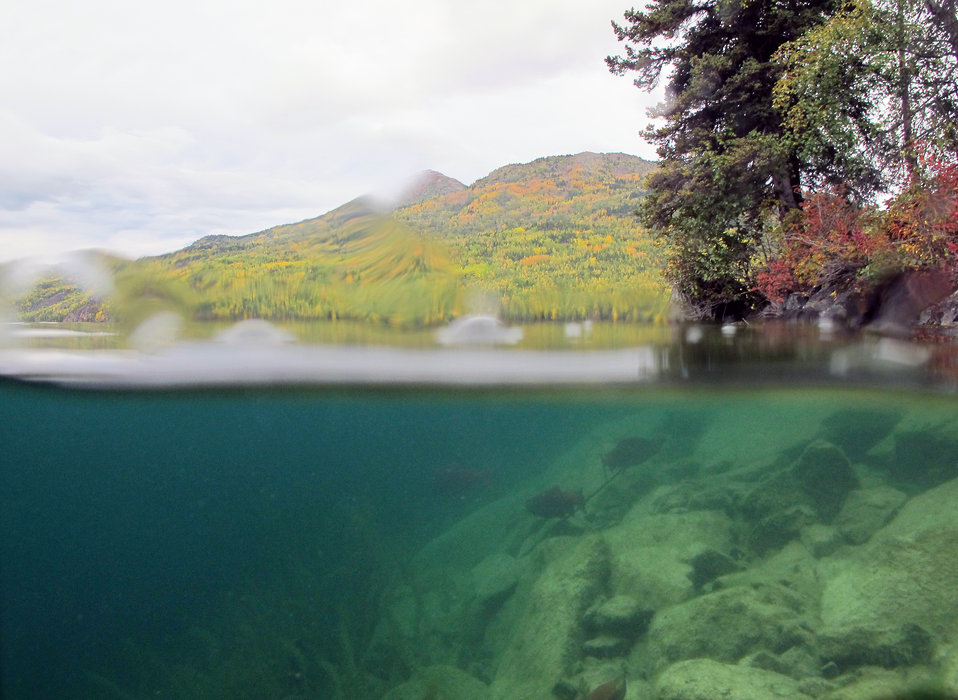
shoreline sockeyes

Sockeyes moving along the shore of Hidden Lake near the boat launch.